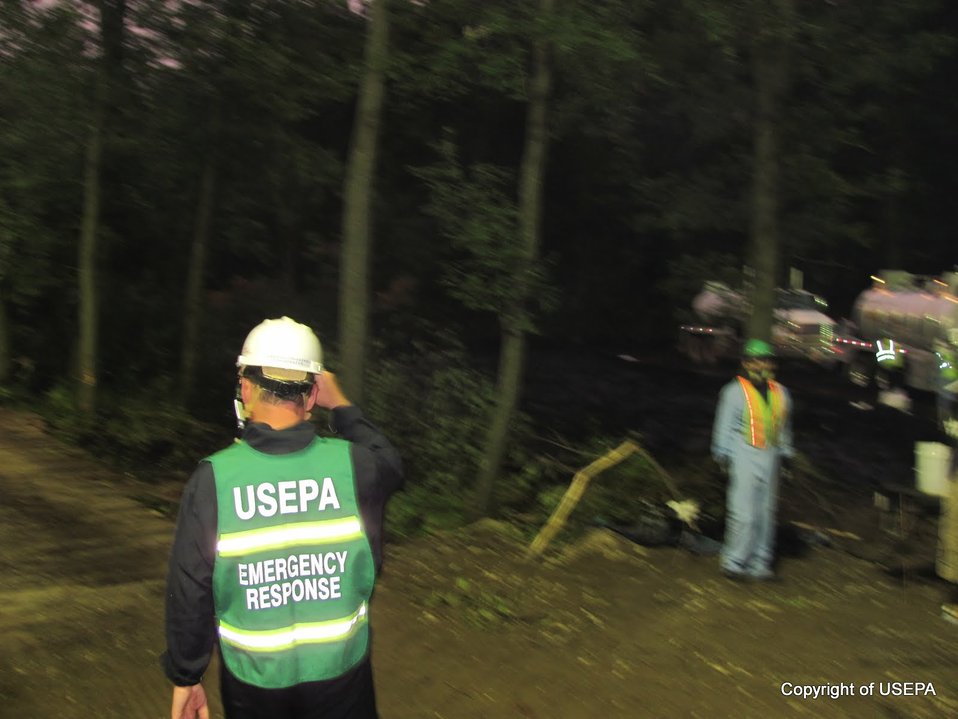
EPA Emergency Response Personnel